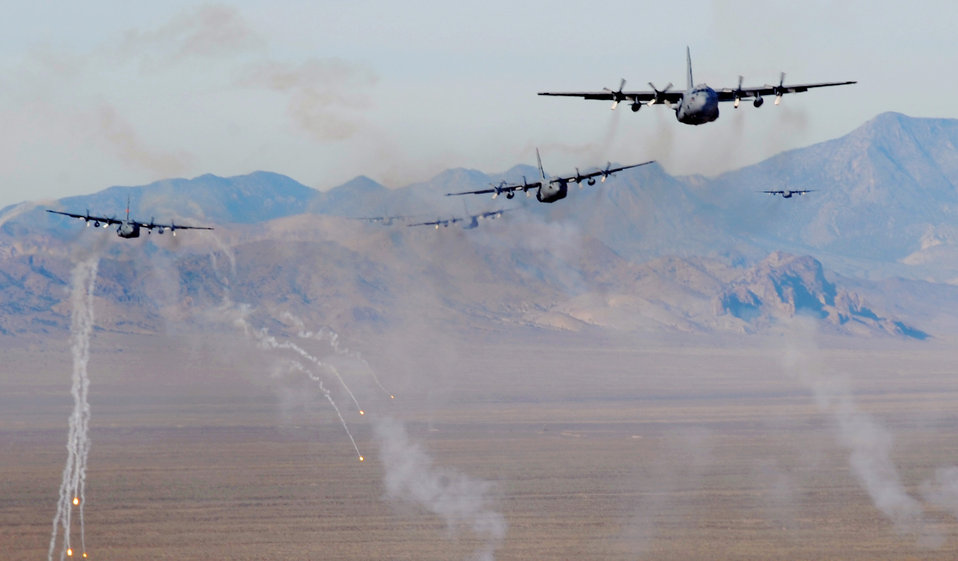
Mobility Air Forces Exercise

A formation of C-130 Hercules aircraft fire off chaff and flare countermeasures over the Nevada Test and Training Range Nov. 17, 2010 during a Mobility Air Forces Exercise. More than 40 C-17 Globemaster IIIs and C-130s assembled in aerial formations over the range to conduct air and ground operations.